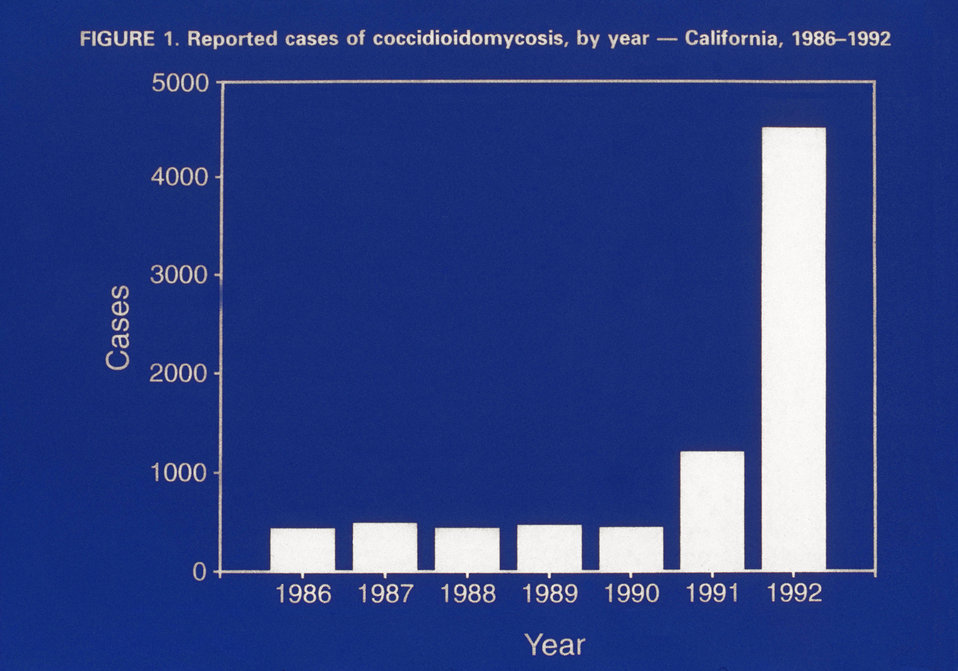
Bar graph showing reported cases of coccidioidomycosis in California by year, 1986-1992.